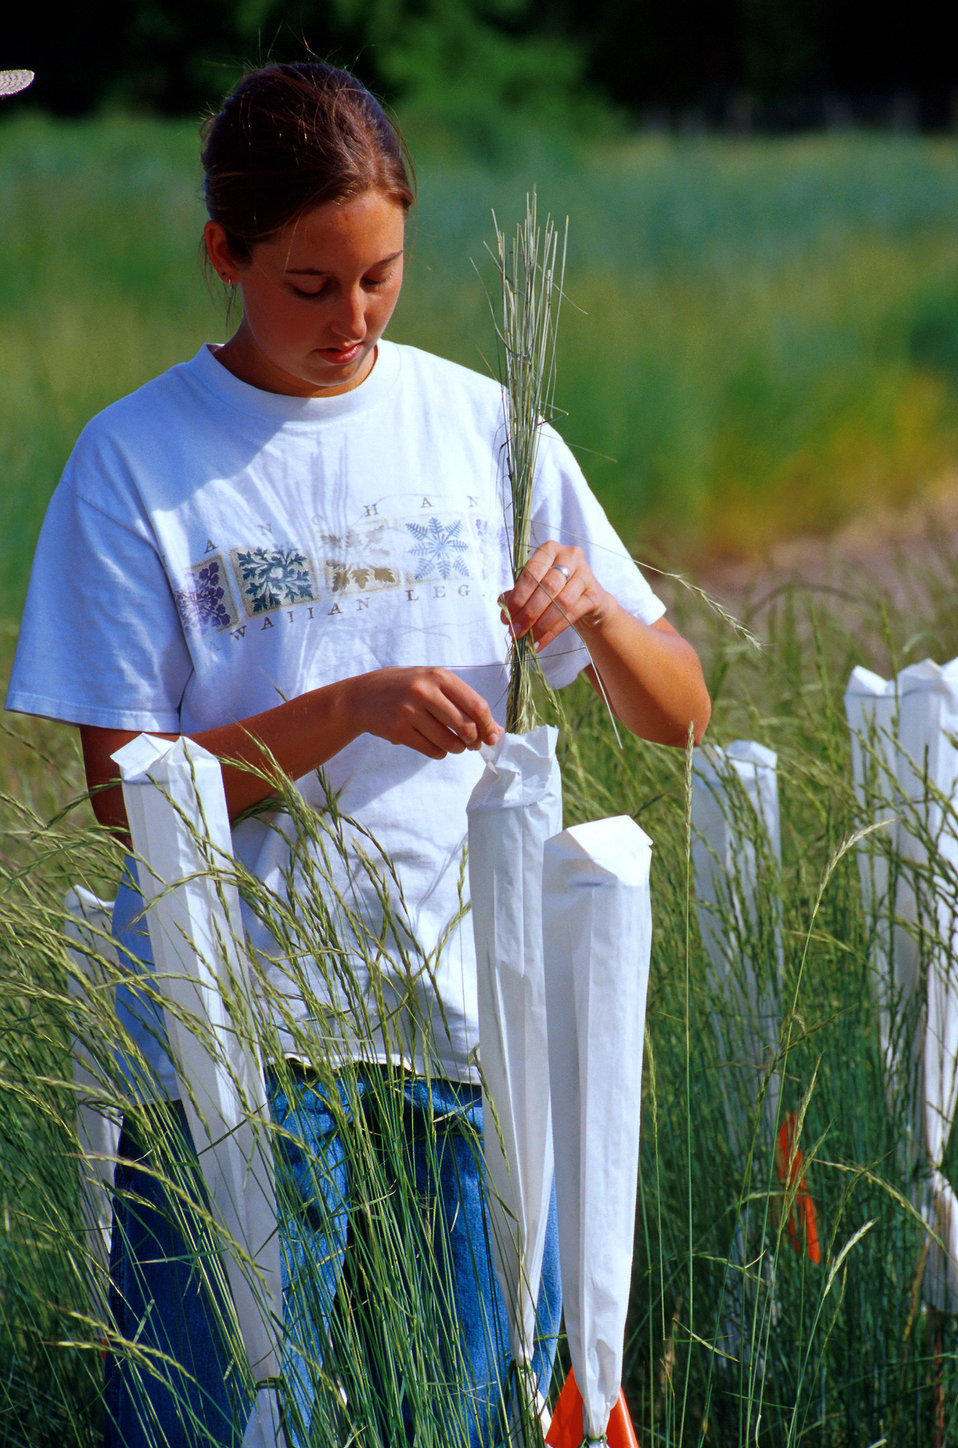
On a U.S. Department of Agriculture (USDA) Agricultural Research Service (ARS) test plot Utah State University research assistant Mayme Seng pollinates Snake River wheatgrass.